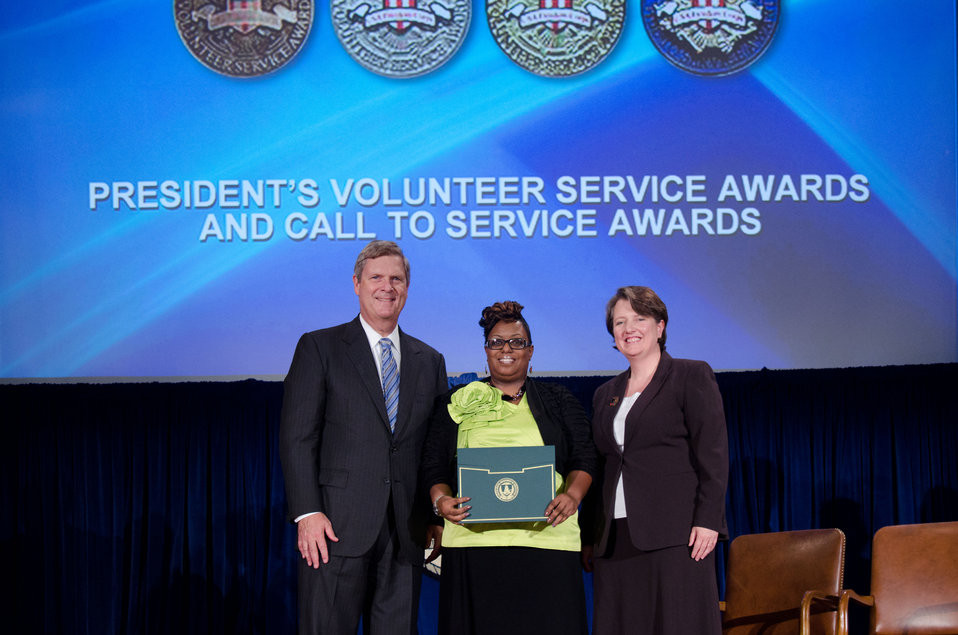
Agriculture Secretary Tom Vilsack (l) and Deputy Secretary Kathleen Merrigan (r), presents the President’s Volunteer Service Awards and Call to Service Award to Charlene Brown, Agricultural Research Service. On Wednesday, September 14, 2011 in the Jefferson Auditorium at the US Department of Agriculture in Washington, DC.